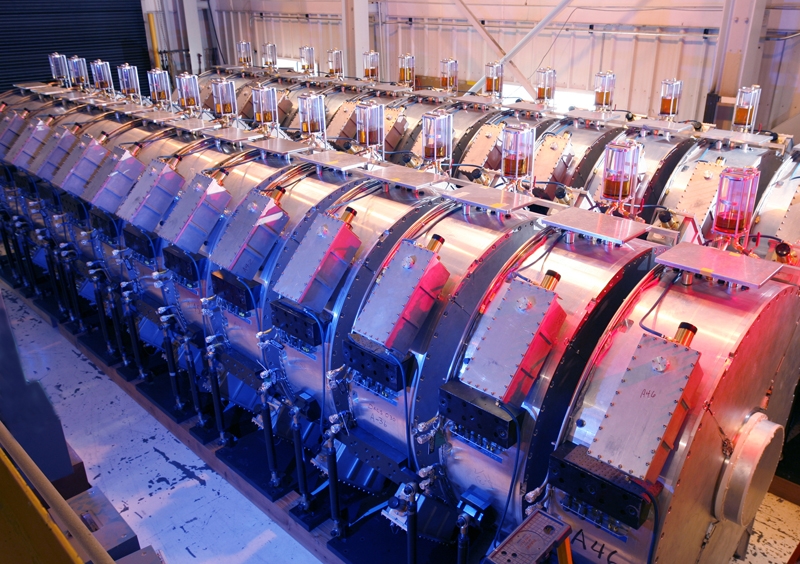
AL LOS ALAMOS NATIONAL LABORATORY, DARHT'S ELECTRON ACCELERATORS USE LARGE, CIRCULAR ALUMINUM STRUCTURES TO CREATE MAGNETIC FIELDS THAT FOCUS AND STEER A STREAM OF ELECTRONS DOWN THE LENGTH OF THE ACCELERATOR.

WHEN THE STREAM OF HIGH-SPEED ELECTRONS EXITS THE ACCELERATOR IT IS 'STOPPED' BY A TUNGSTEN TARGET RESULTING IN AN INTENSE BURST OF X-RAYS THAT ARE USED TO CREATE DIGITAL IMAGES OF MOCK NUCLEAR DEVICES AS THEY IMPLODE.

DARHT- DUAL-AXIS RADIOGRAPHIC HYDRODYNAMIC TEST FACILITY